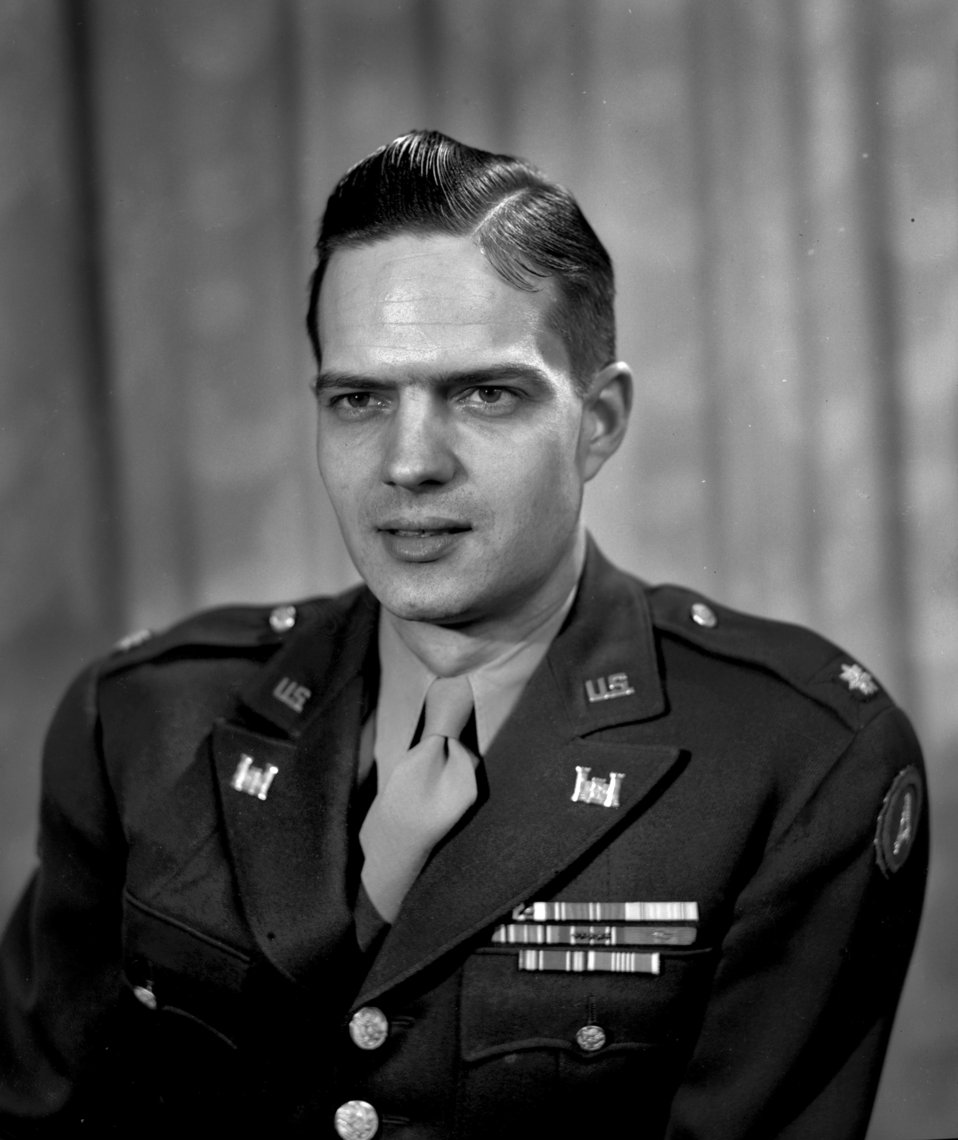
Col. Williams Portriat Oak Ridge

3220-5 DOE photo Ed Westcott 1-3-1947 Oak Ridge Tennessee